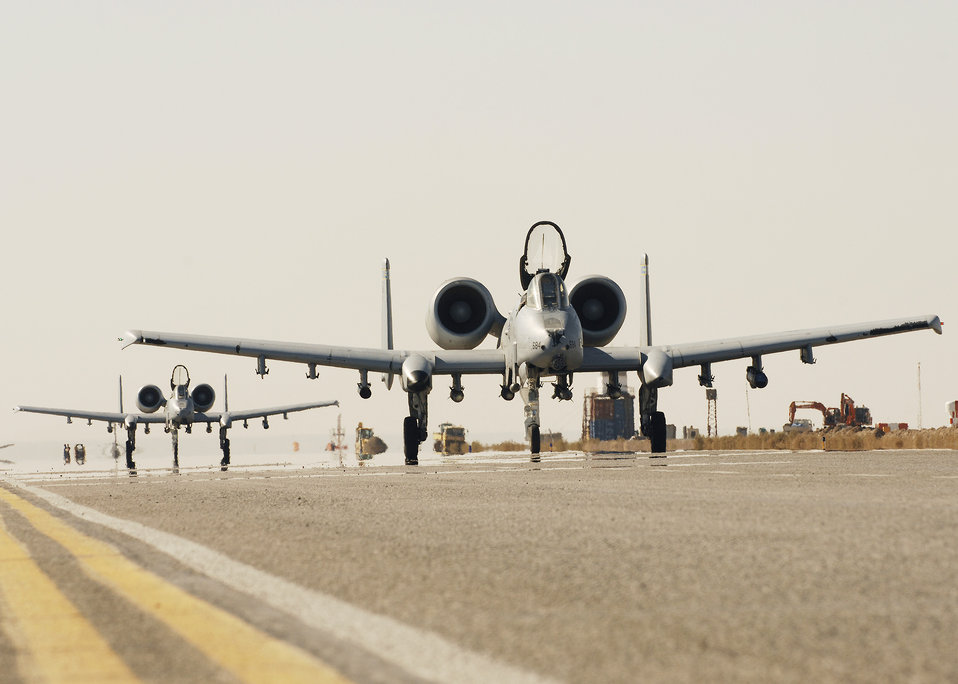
10,000 hours

Two A-10C Thunderbolt IIs, flown by Lt. Col. Michael Millen, 354th Expeditionary Fighter Squadron commander, and Col. John Cherrey, 451st Expeditionary Operations Group commander, taxi down the runway after completing 10,000 hours of flying at Kandahar Airfield, Afghanistan, Jan. 1, 2010. The flying was accomplished during a six-month deployment.